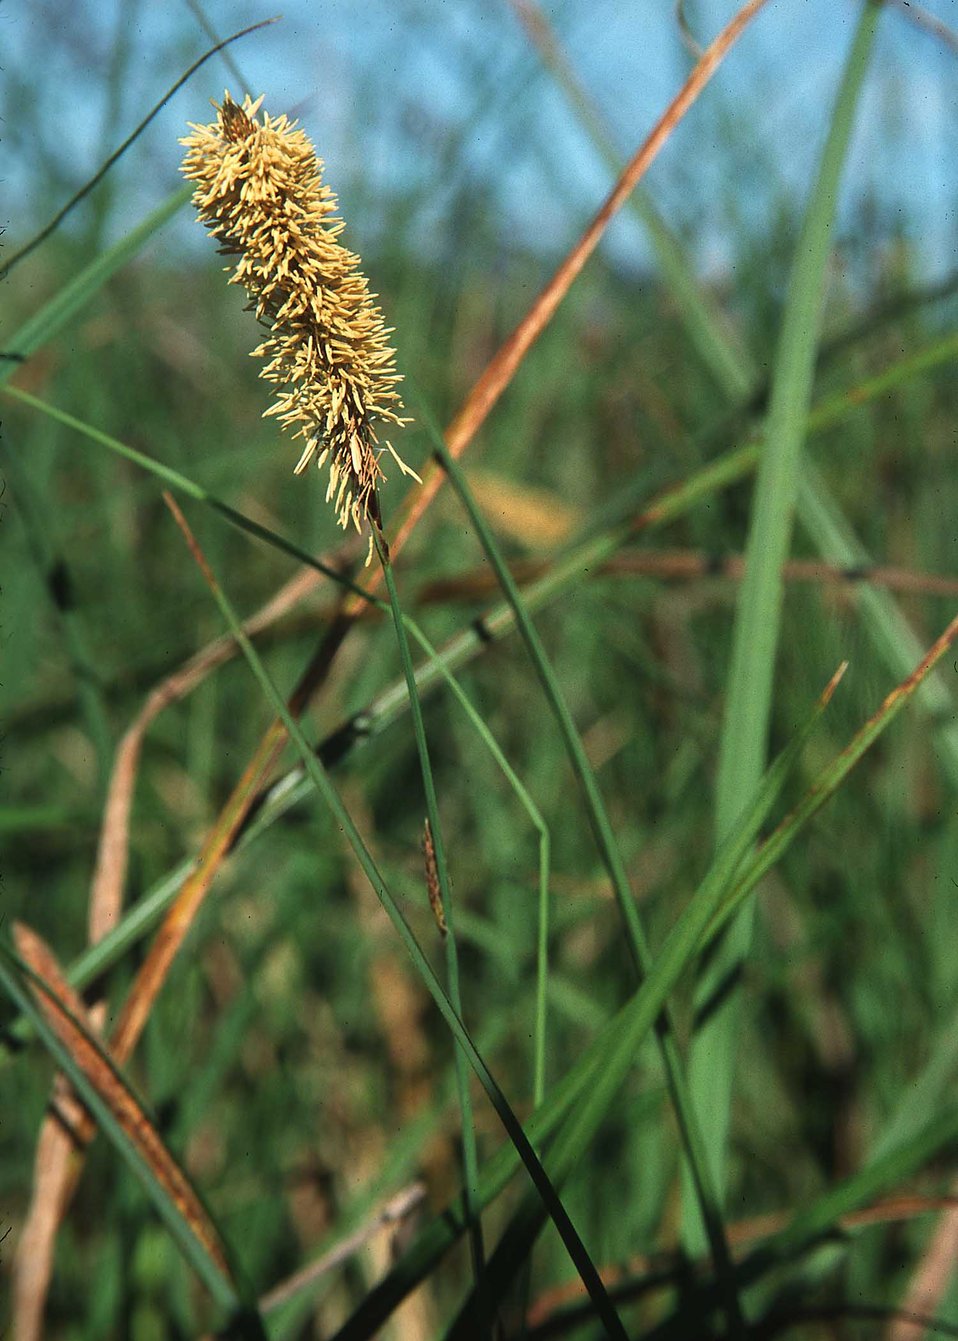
Grass.